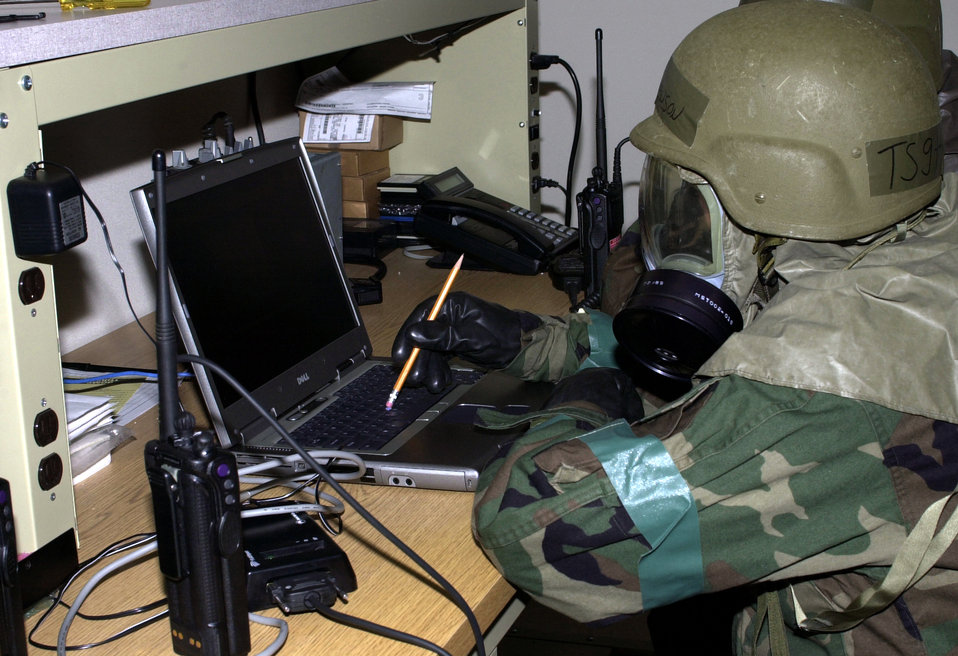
Drill weekend

MINNESOTA AIR NATIONAL GUARD BASE, Minn. -- Tech. Sgt. Erik Swenson uses a pencil to type onto a laptop computer to program a hand-held radio during a drill weekend exercise here April 17. Sergeant Swenson is a member of the Minnesota ANG's 133rd Communications flight maintenance section.